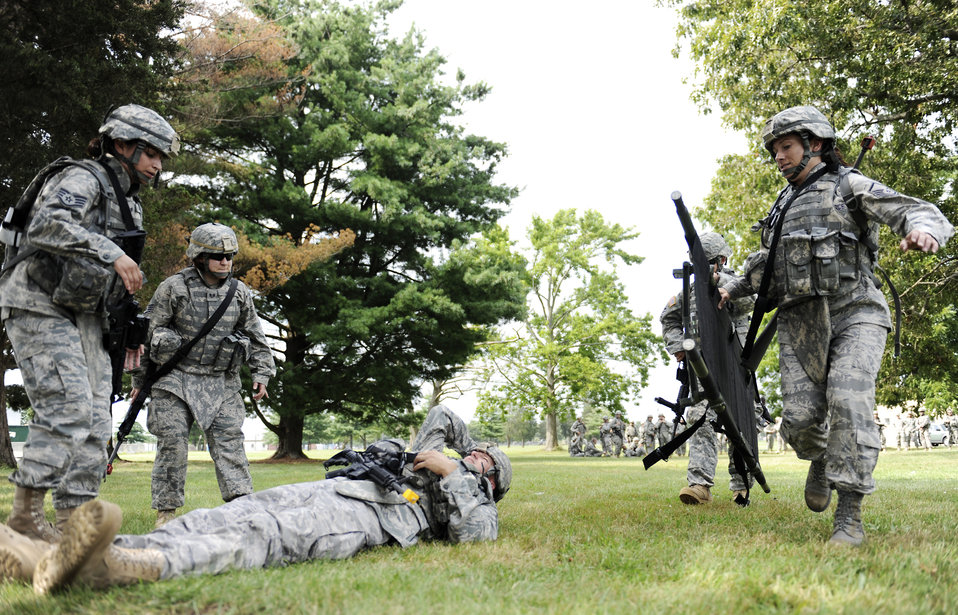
Airmen prepare for deployment

Airmen prepare to recover a